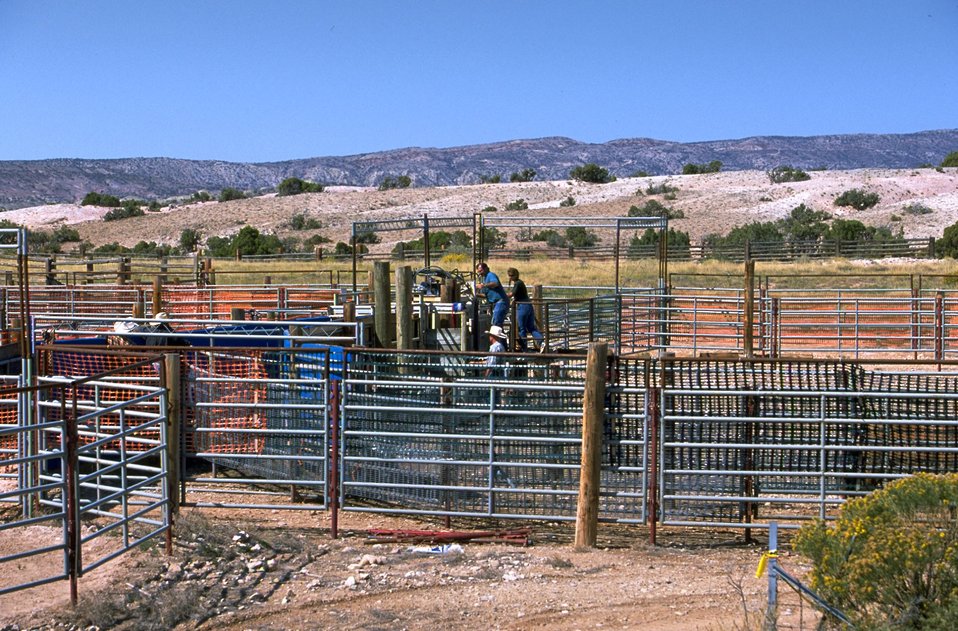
Wild Horse holding area at Britton Spring in the Pryor Mountain National Wild Horse Range